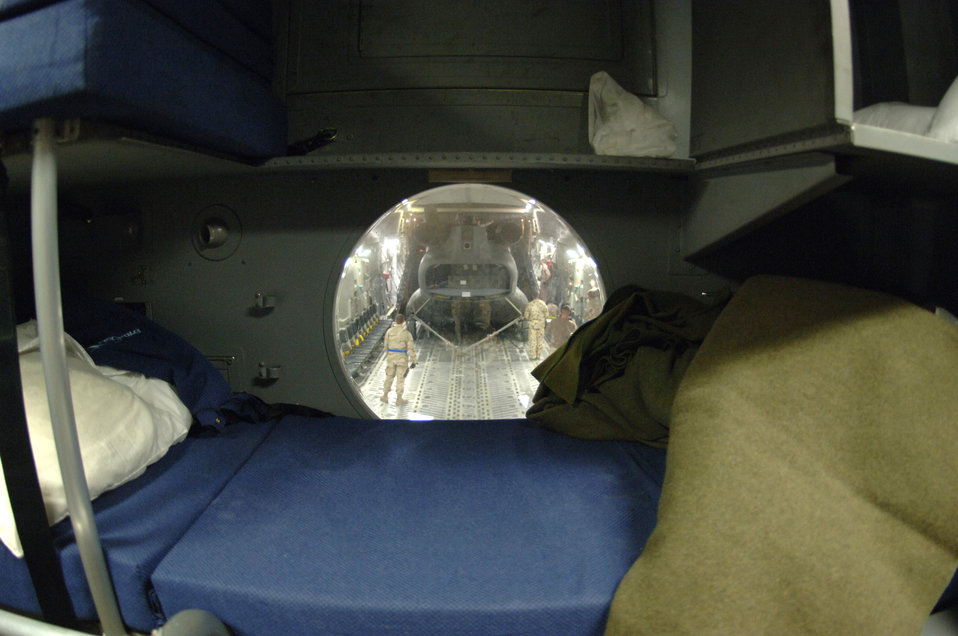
C-17 cargo load

Crewmembers from the 817th Expeditionary Airlift Squadron and their Australian forces counterparts upload an Australian Army CH-47 helicopter onto a C-17 Globemaster III at a deployed location in Southwest Asia on Sunday, Mar. 12, 2006. The C-17 is from McChord Air Force Base, Wash.